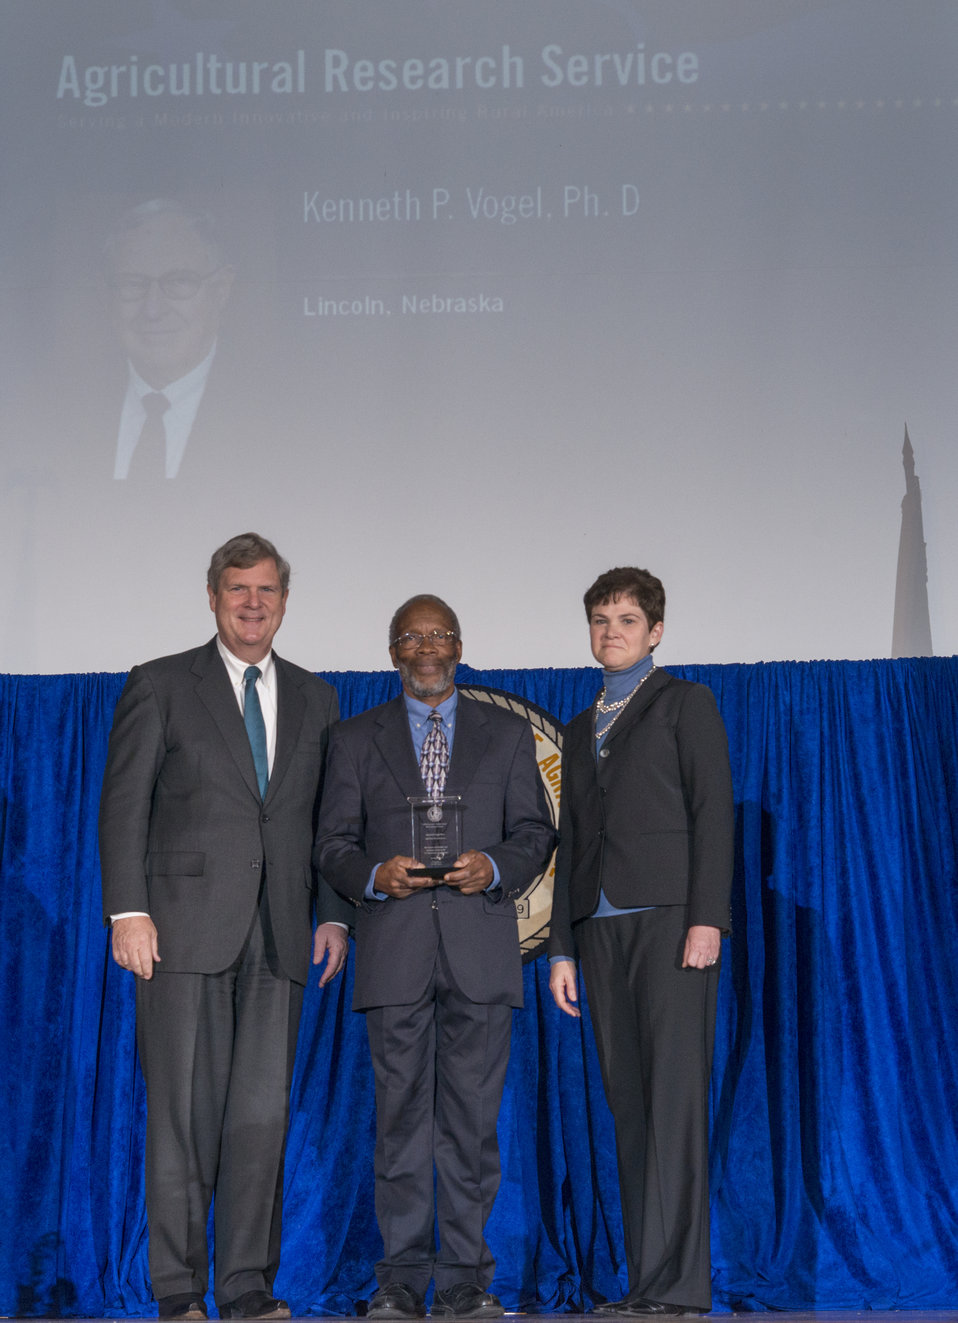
Agriculture Secretary Tom Vilsack and Agriculture Deputy Secretary Krysta Harden present the Secretary’s Honor Award to Kenneth P. Vogel, Ph.D. (accepting Dr. Roy Scott) Agricultural Research Service (ARS) for personal and professional excellence in the science of grasslands and bioenergy production systems at the 2013 Honor Awards in the Jefferson Auditorium at the U.S. Department of Agriculture (USDA) in Washington, D.C. on Wednesday, Dec. 11, 2013.